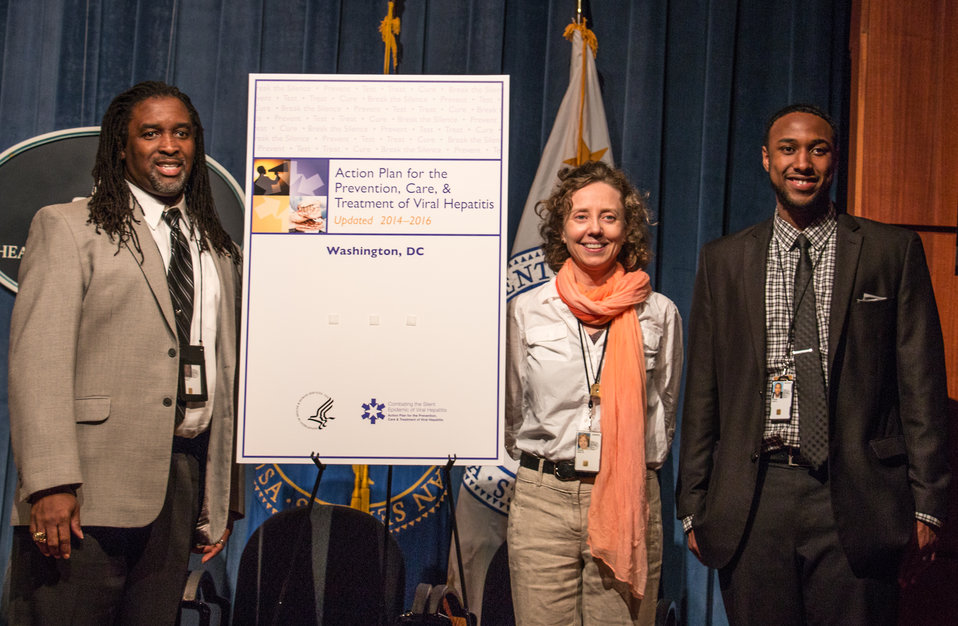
VHAP Launch (489 of 511)